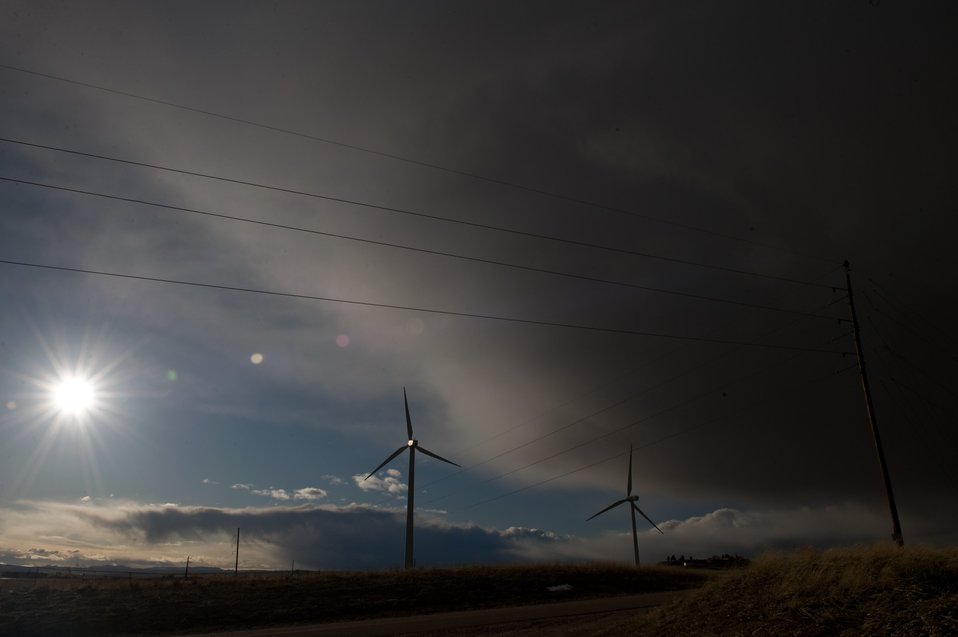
Winds of Energy

Two of the three wind turbines at F.E. Warren Air Force Base, Wyoming faces the wind coming across the high plains and push against the clouds that later dropped a few inches of snow on the base and surrounding city of Cheyenne on April 6, 2010. The larger wind turbine (right) was completed and online early in 2009 and is rated at 2 mega watts of electrical energy that goes directly into the base power grid. The other two produces a combined output of 1.3MW. From most points on the base the wind turbines can be seen. At its base the blades make a low whoosh sound.